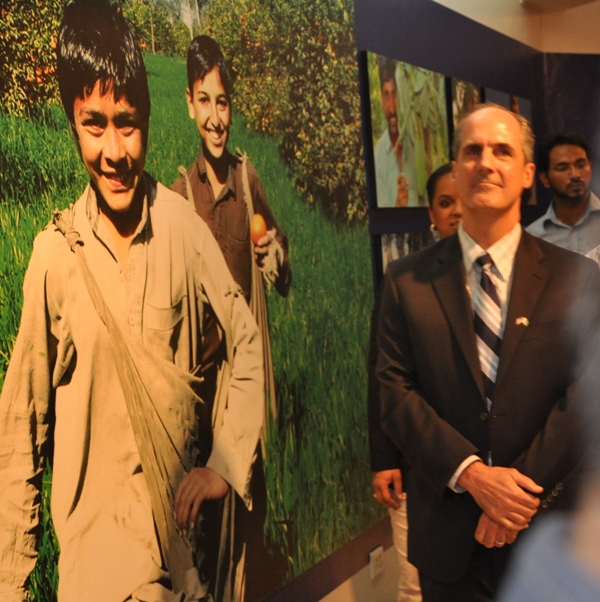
Provinicial Mission Director Punjab Ted Gehr and USAID team walking through the photos on display